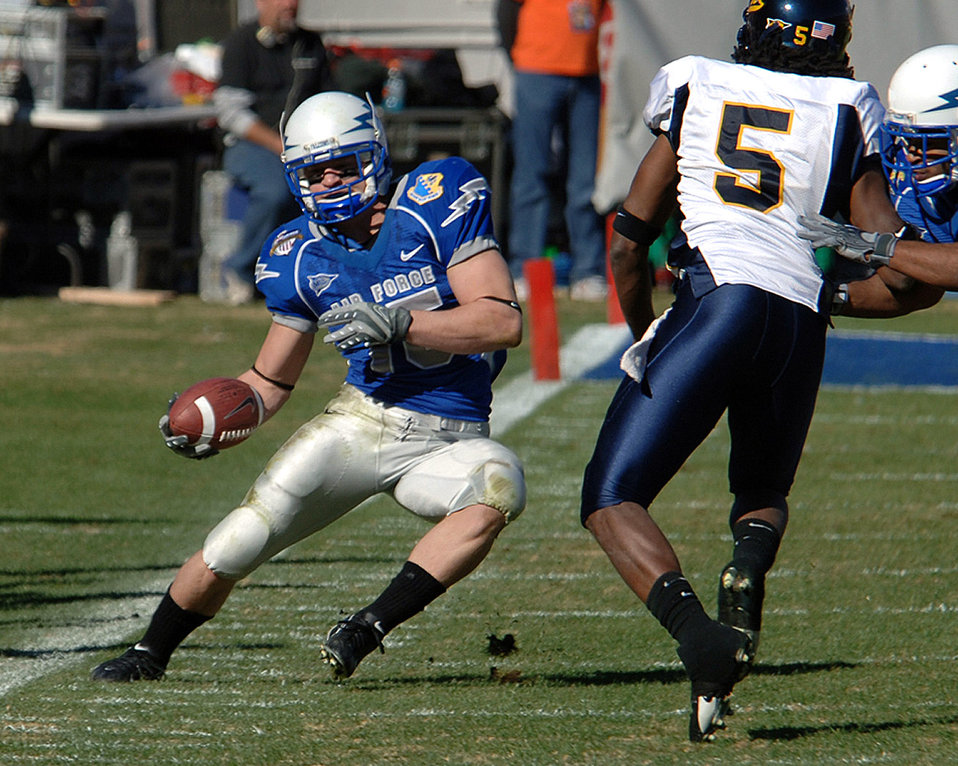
Falcons bowl return a bear

Falcon senior tailback Jim Ollis cuts along the sideline to elude California defensive back Syd'Quan Thompson during the Bell Helicopter Armed Forces Bowl at Amon G. Carter Stadium Dec. 31. The Falcons lost 42-36 in their first bowl appearance since 2002.